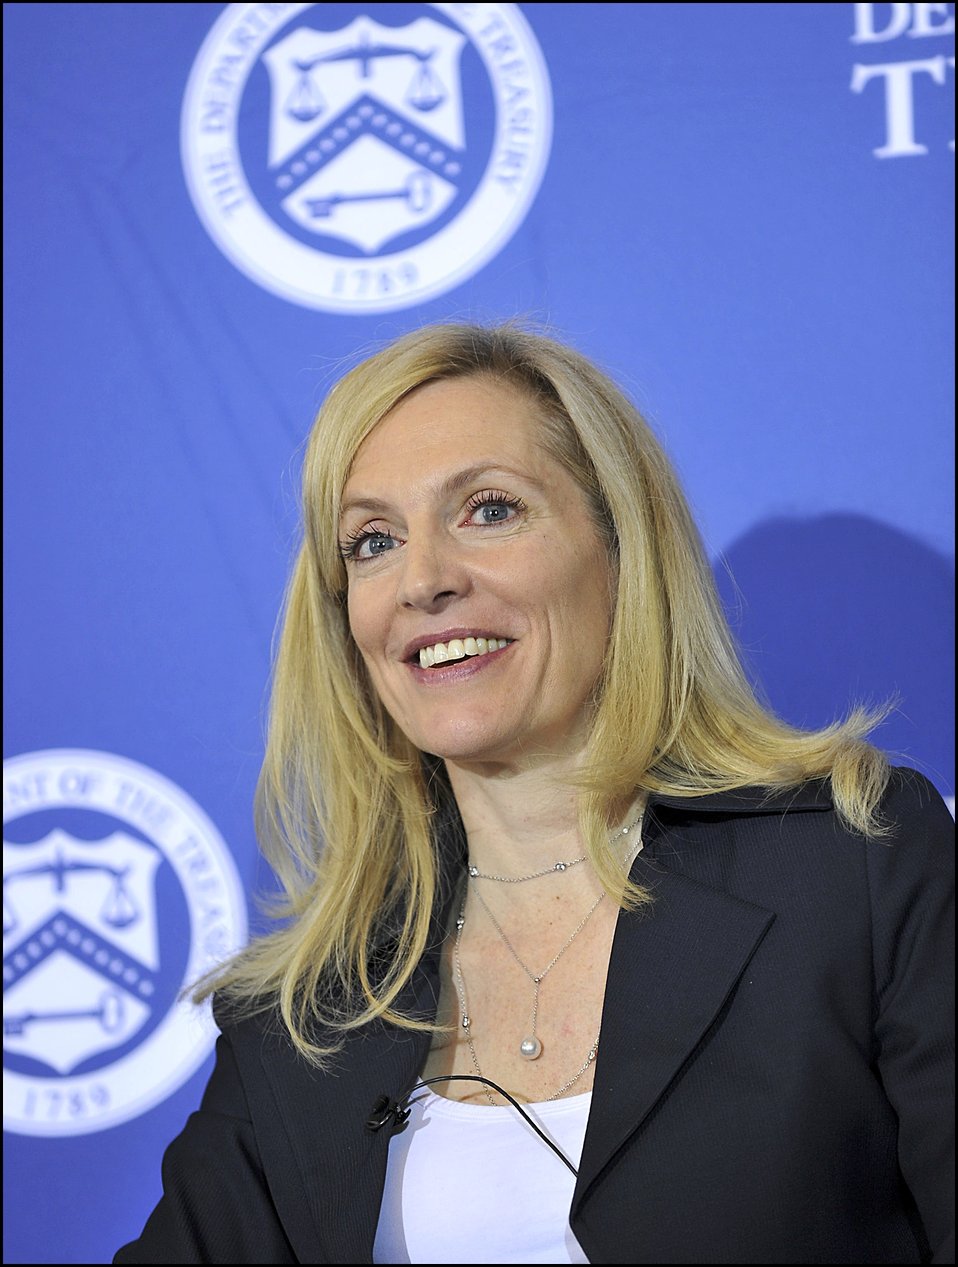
20th Anniversary of Treasury’s Office of Technical Assistance

Under Secretary for International Affairs Lael Brainard moderated a panel discussion on capable states and aid effectiveness.